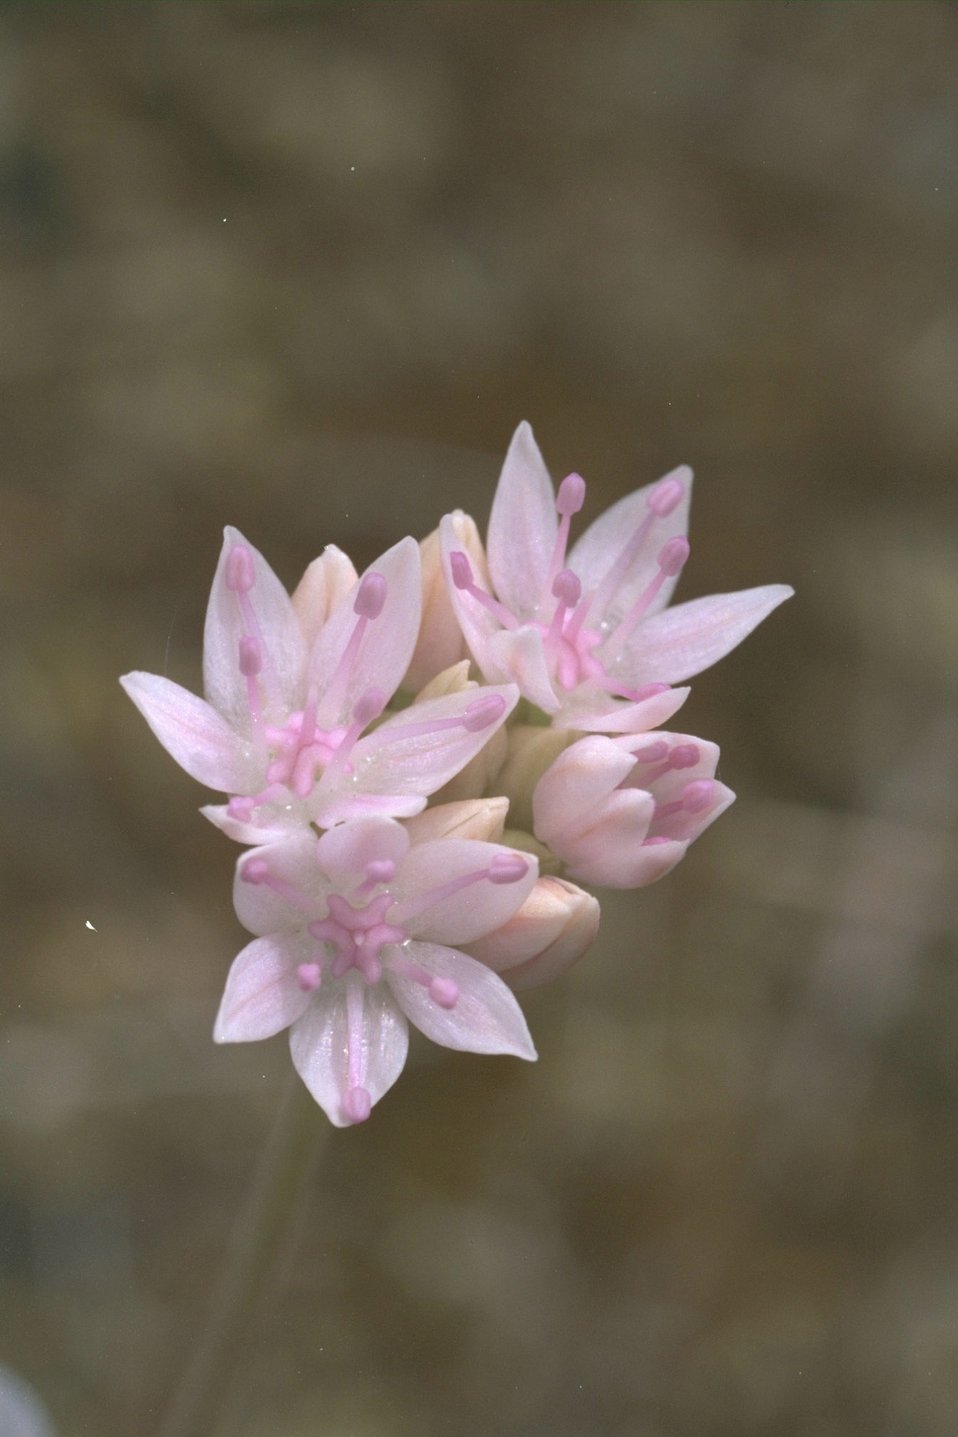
Wild Onion blossom (Allium sp.) at Upper Table Rock.